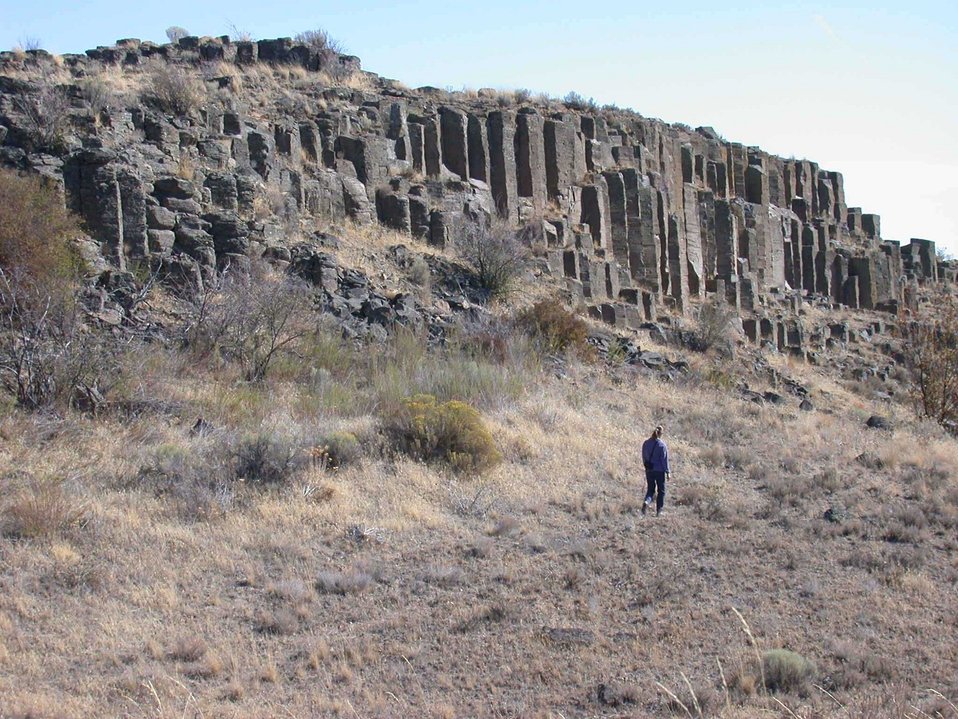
Public Lands Day Sprague geologic tour of columnar basalt ridge in Lake Missourla Flod Channels.